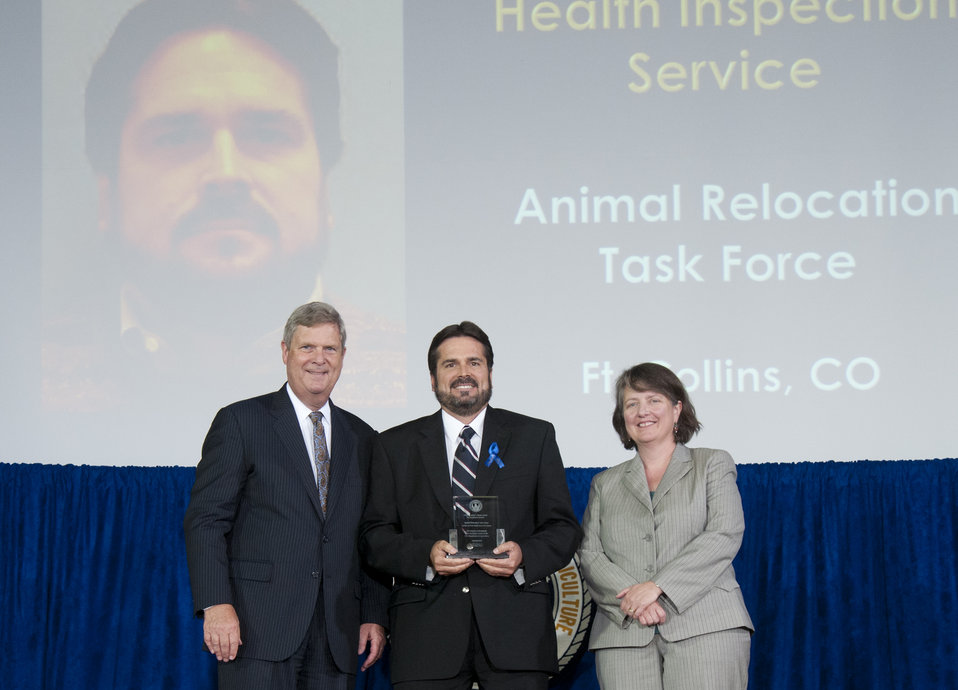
Agriculture Secretary Tom Vilsack and Agriculture Deputy Secretary Kathleen Merrigan present the Secretary’s Honor Award to Animal Relocation Task Force Animal and Plant Health Inspection Service (APHIS) group leader Robert Gibbens at the U.S. Department of Agriculture (USDA) 64th Annual Honor Awards Ceremony in Washington, D.C. on Wednesday, Sept. 12, 2012. The Animal Relocation Task Force supported efforts that empowered a successful resolution to the care and placement of over 300 animals from the Wild Animal Orphanage.